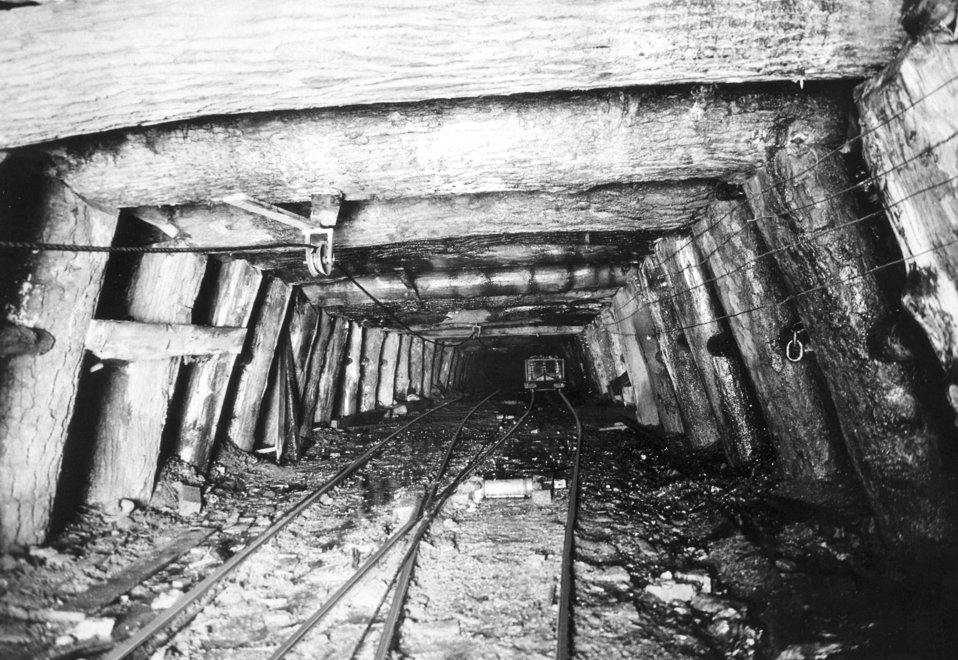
This historical image, which was provided by the Center for Disease Control's (CDC), National Institute for Occupational Safety and Health (NIOSH), depicted one of the subterranean passageways in a coal mine, which had been configured to be a 'haulageway', which is a corridor designated as a transport route, usually equipped with a track, i.e., rail, or a conveyor belt. Note the roof supports, constructed from what appeared to be very large tree trunks.